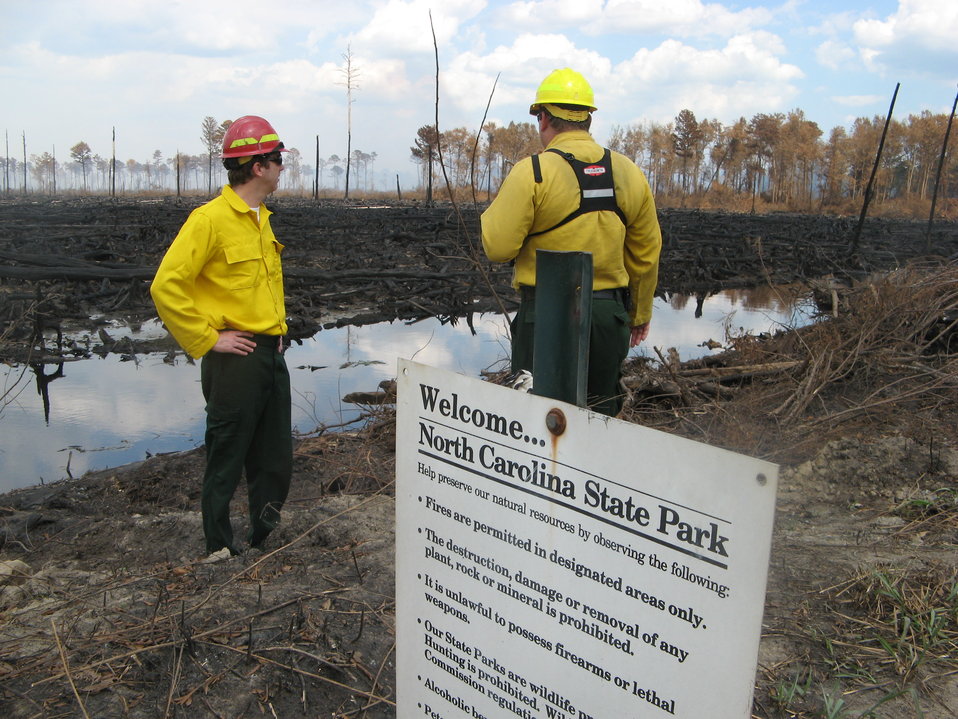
Fire knows no boundaries

Suffolk, VA, August 2011: North Carolina Department of Environment and Natural Resources Secretary David McKnight (left) visits the Lateral West Fire, which burned about 200 acres on Dismal Swamp State Park and 6,000 acres on Great Dismal Swamp National Wildlife Refuge.